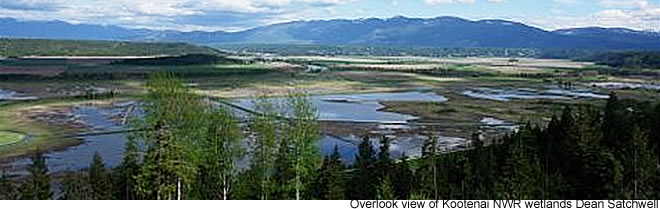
Kootenai NWR

Wetlands are just one type out of a wide variety of habitat types found at Kootenai NWR.